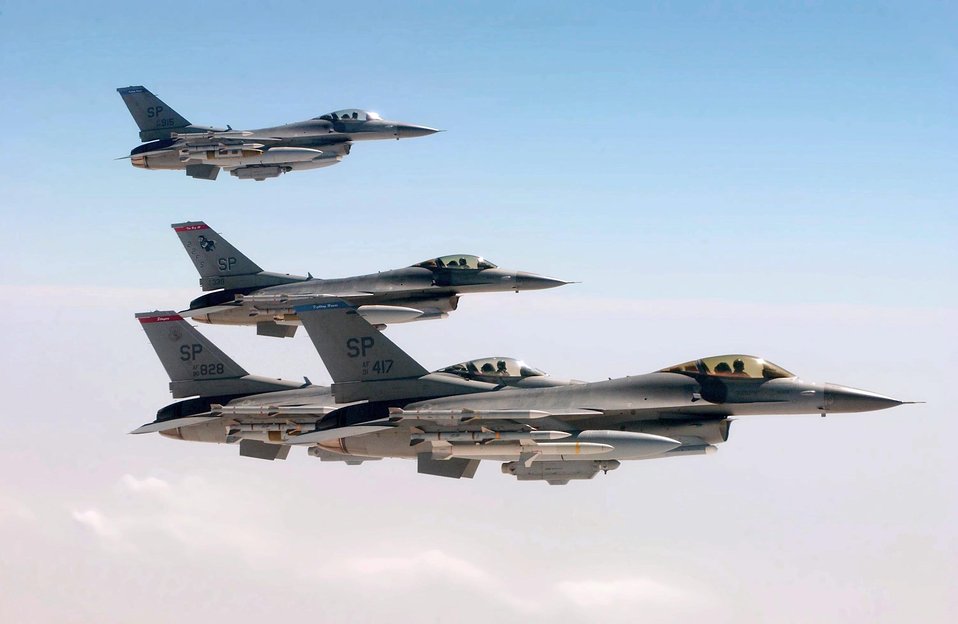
Flock of falcons

OPERATION IRAQI FREEDOM -- Spangdahlem F-16s fly observation formation off the wing of a KC-10. KC-10 Extenders from the 305th/514th Air Mobility Wing, McGuire AFB, N.J., are deployed to Burgas Airport and nearby Camp Sarafovo, Bulgaria, to support tanker operations. Members from various Air Force units world-wide are currently deployed with the 409th AEG in support of Operation Iraqi Freedom.